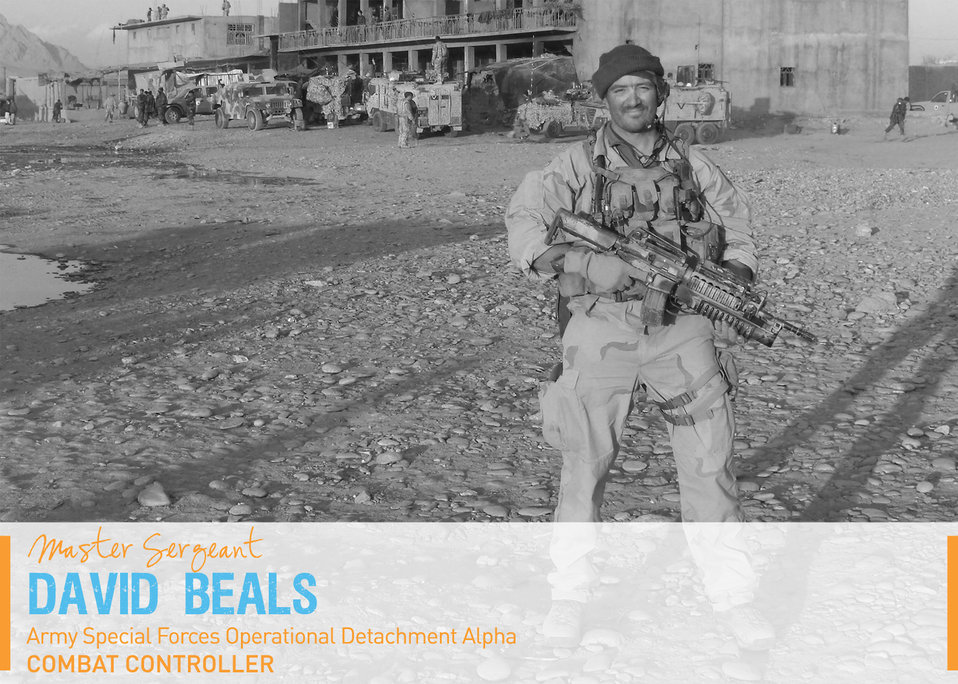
Portraits in Courage Vol 4: Master Sgt. David Beals, combat controller, Army Special Forces Operational Detachment Alpha. He provided direction and leadership in a 200-vehicle convoy mission in the remote Afghanistan countryside resulting in thwarting the enemy in two determined attacks.